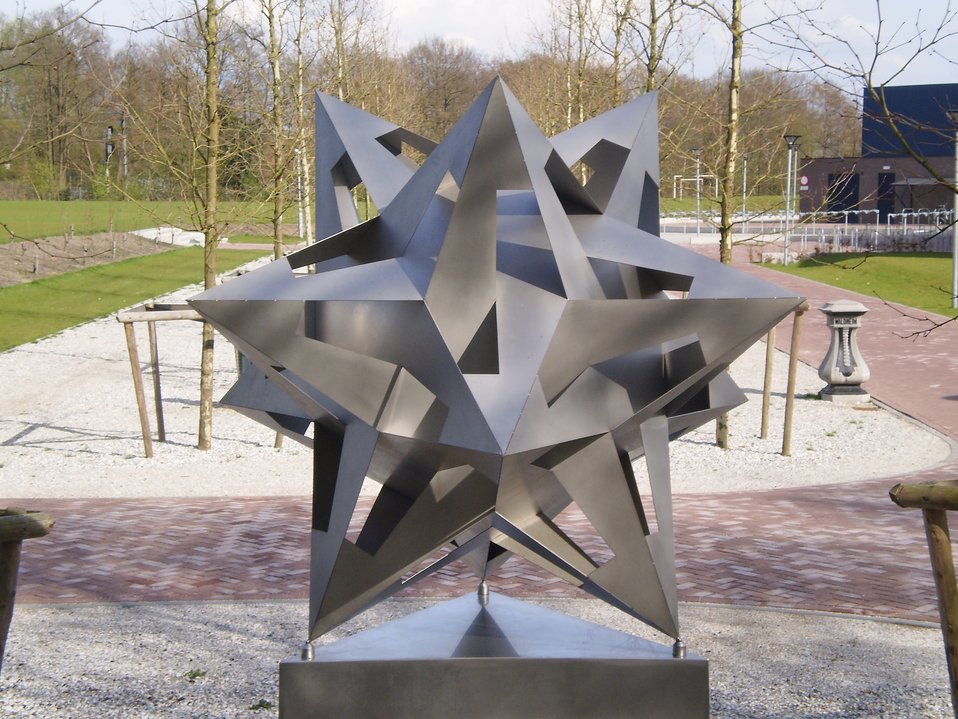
Nederlands: Het Baarnsch Lyceum